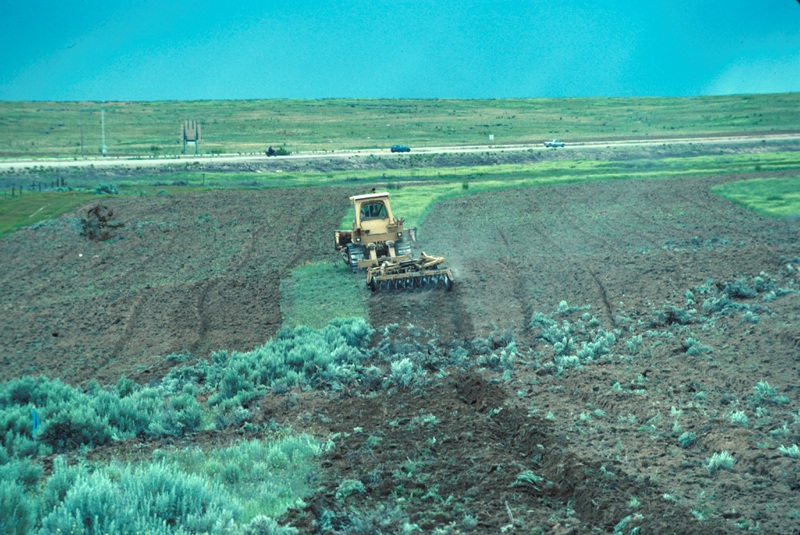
Four Rivers Field Office New Plymouth Exit Range Restoration Project Lower Snake River District